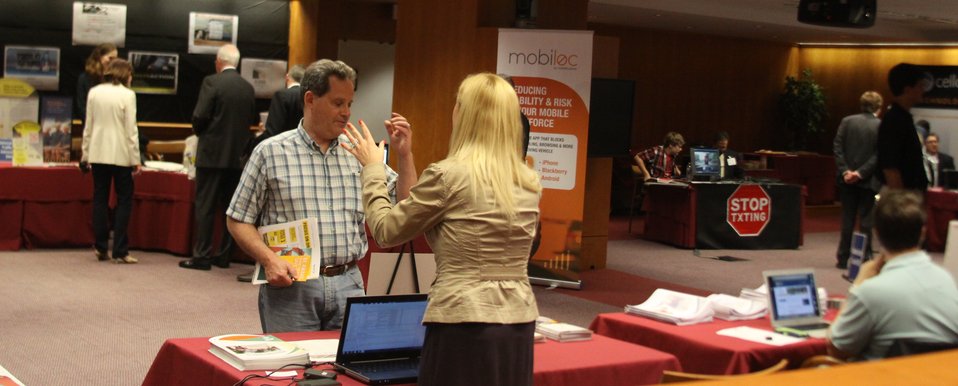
Distracted Driving Technology Showcase April 19, 2013